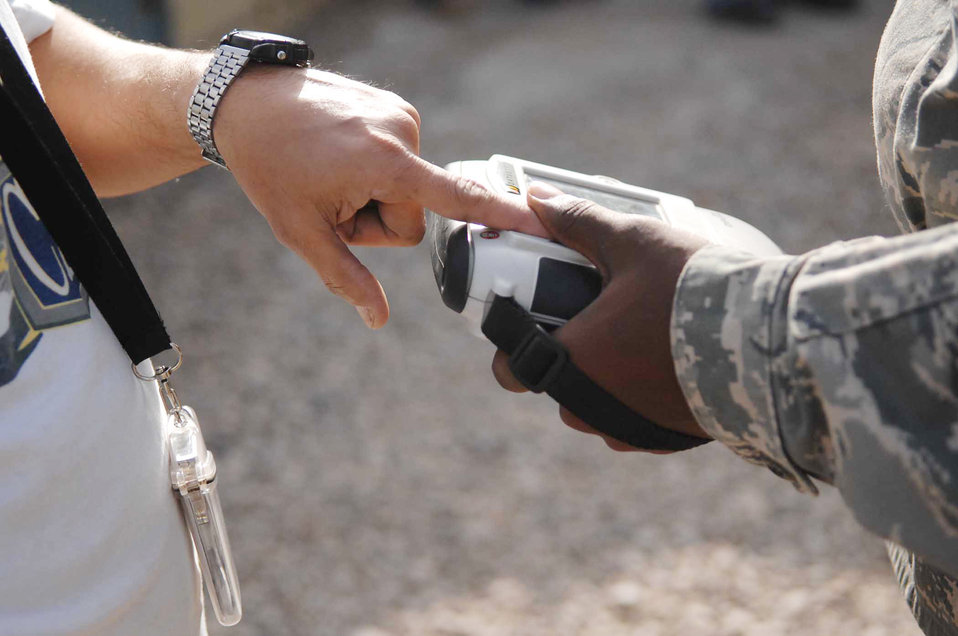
Airmen decrease base threats with random antiterrorism measures

A 332nd Expeditionary Security Forces Squadron Airman conducts a random biometrics systems check on a third-country national Nov. 6, 2009, at Joint Base Balad, Iraq. The check matches identification-card holders with their fingerprints.